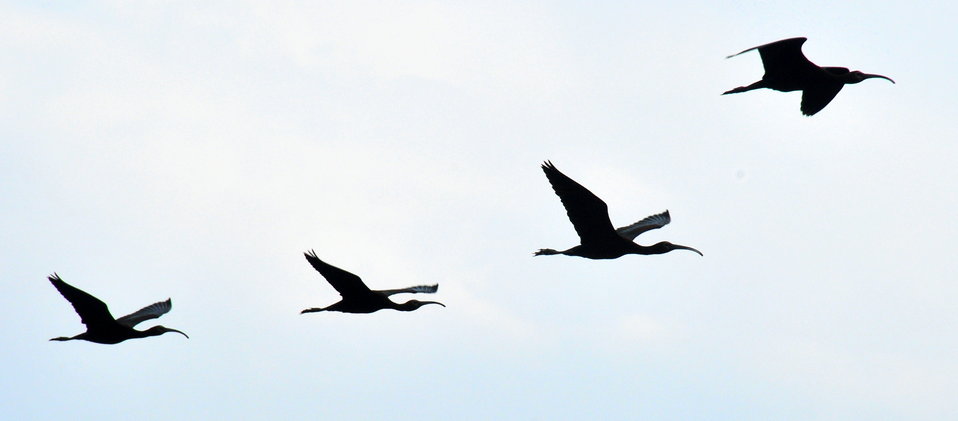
White-faced Ibis Silhouette

White faced ibis on Seedskadee NWR.